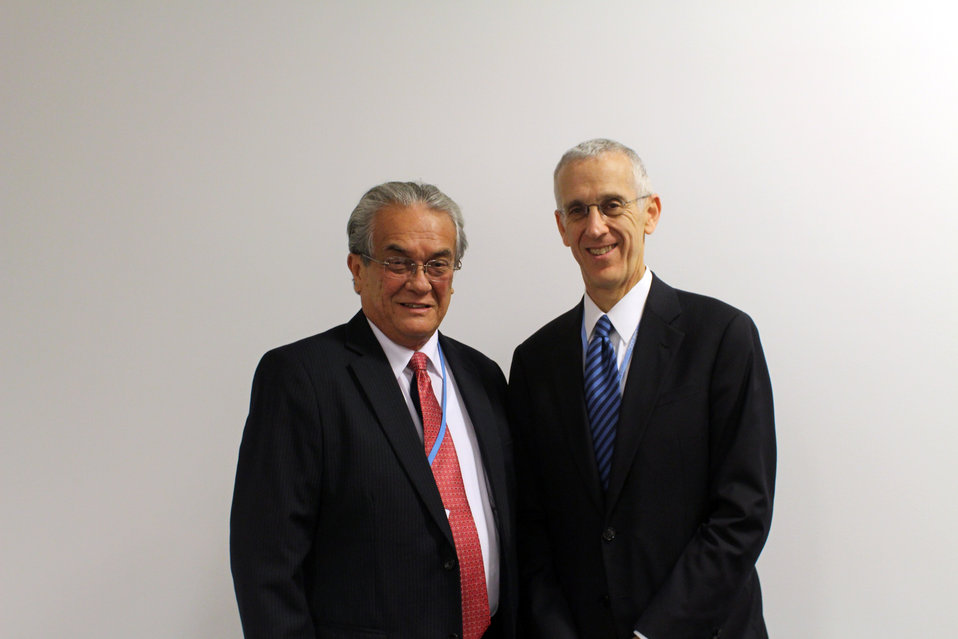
Special Envoy Stern With RMI Minister DeBrum

Special Envoy for Climate Change Todd Stern poses for a photo with Republic of the Marshall Islands (RMI) Minister Tony de Brum after a meeting to discuss their cooperation in addressing the climate concerns of small island developing countries and the United States' recent support of the Majuro Declaration for Climate Leadership at the 19th Session of the Conference of the Parties to the UN Framework Convention on Climate Change (COP19) in Warsaw, Poland, on November 22, 2013.